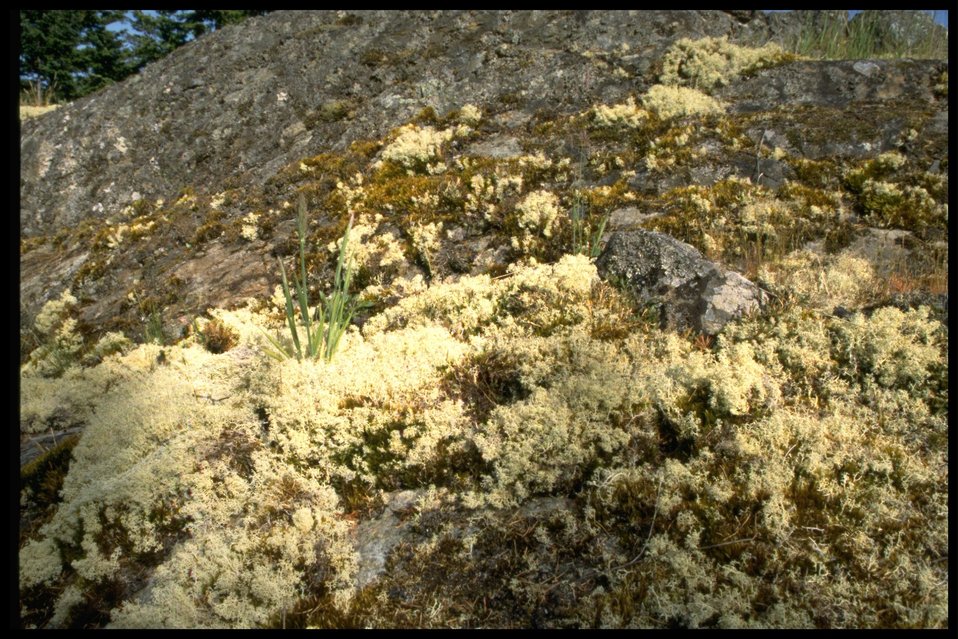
Point Colville lichen habitat.